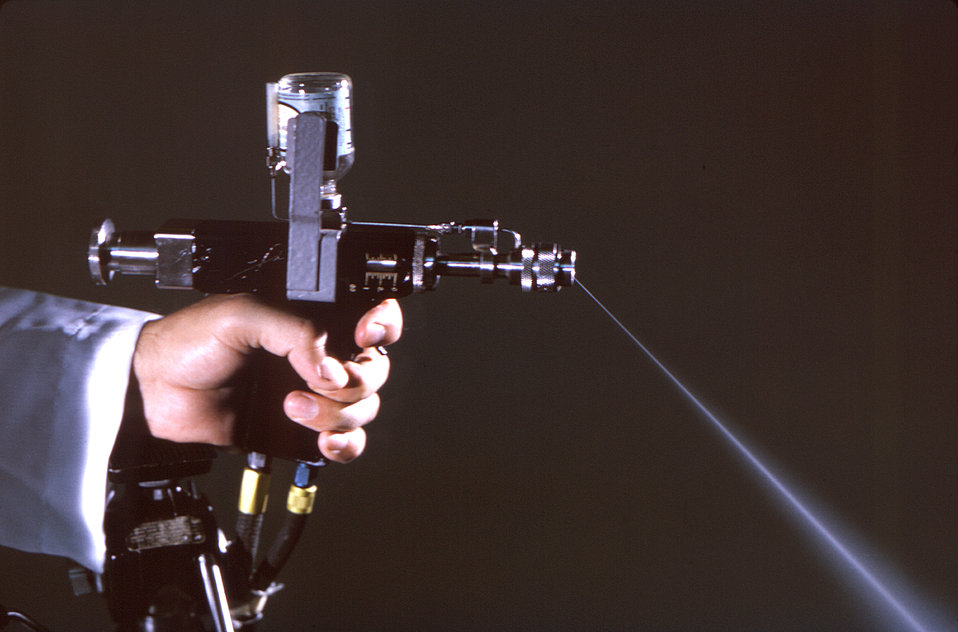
This historic 1965 photograph depicted a hand-held jet-injector, also known as a Ped-O-Jet, that was being fired.